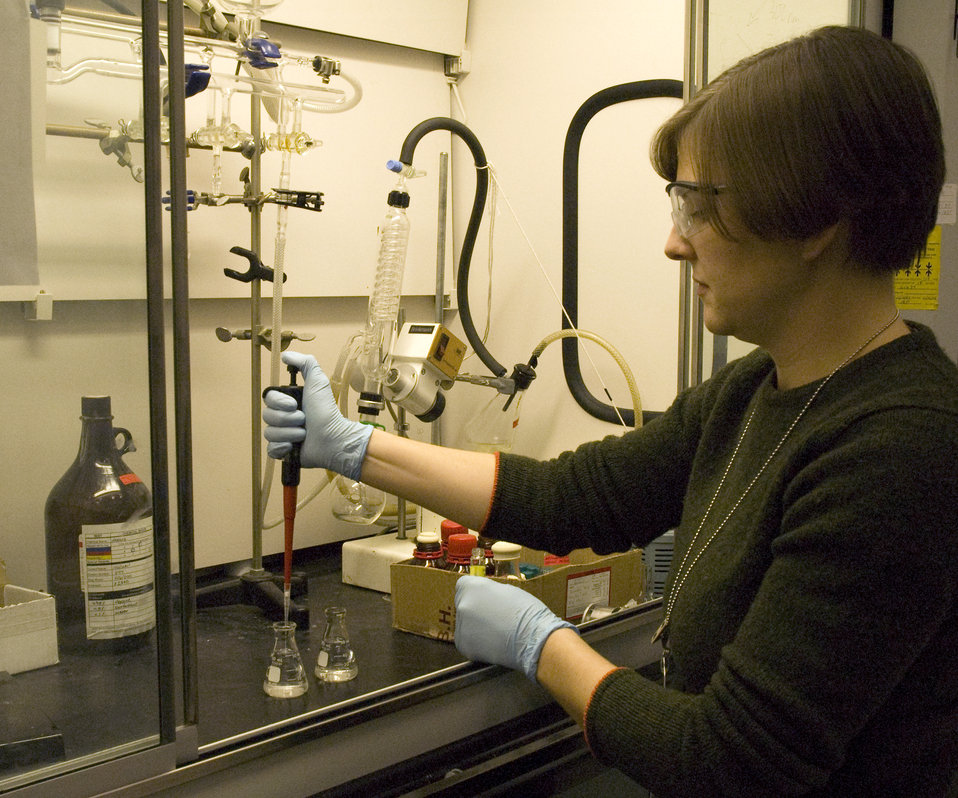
Spectroscopy; Terahertz spectroscopy; Biomolecule dynamics

NIST researcher Ted Heilweil, National Research Council postdoctoral fellow Catherine Cooksey (pictured), and NIST Summer Undergraduate Research Fellow Ben Greer from Carnegie Mellon University have demonstrated the feasibility of a new technique for studying biomolecules using terahertz radiation. Because terahertz waves are almost completely absorbed by water, the team was able to reduce the amount of water to the bare minimum while still providing a realistic sample environment by using hollow, nanosized droplets called micelles as tiny test tubes.